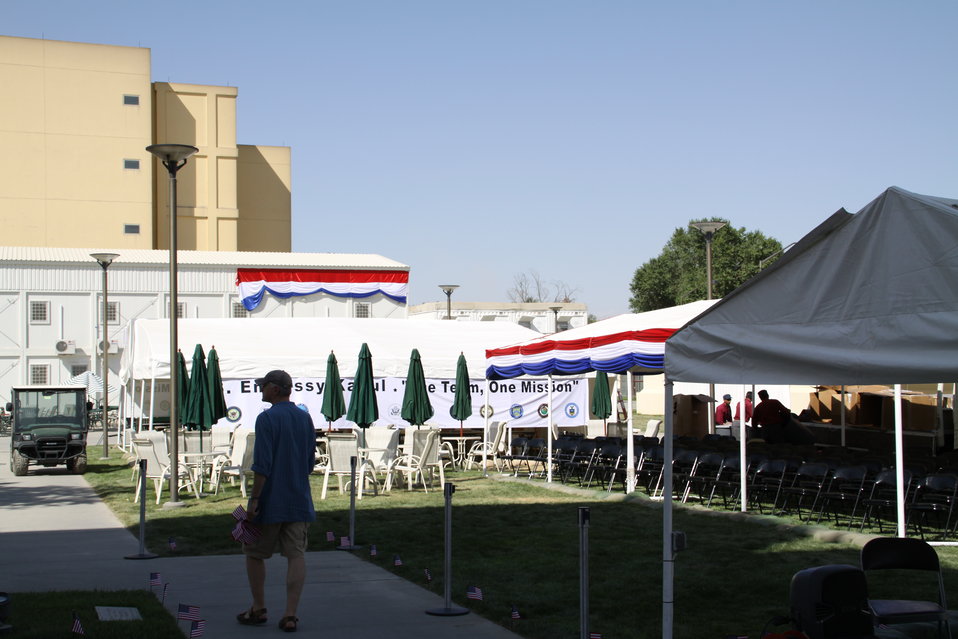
Official July 4th Event Preparation